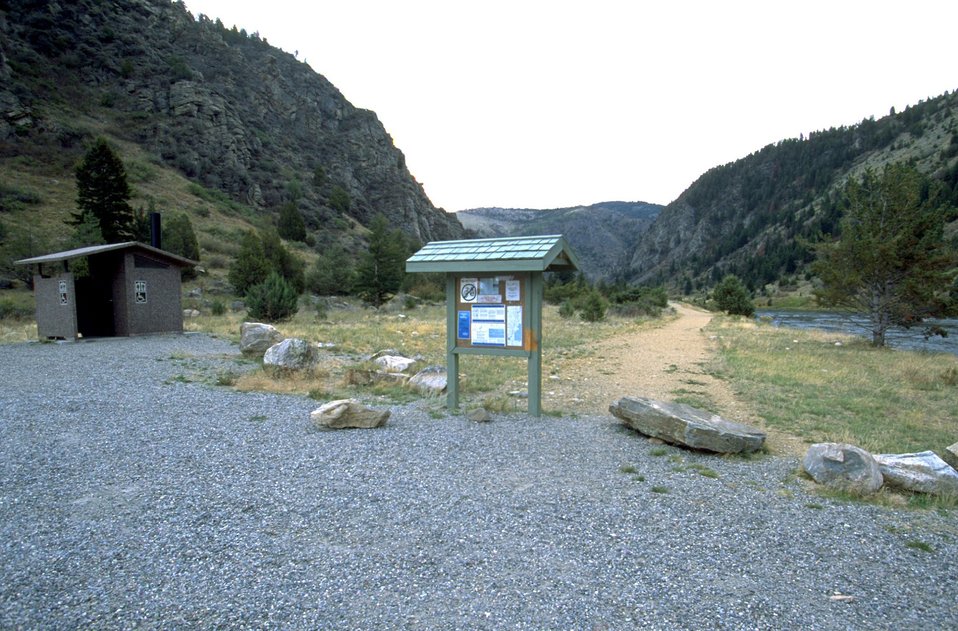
The kiosk and outhouse at the trailhead of Bear Trap Canyon